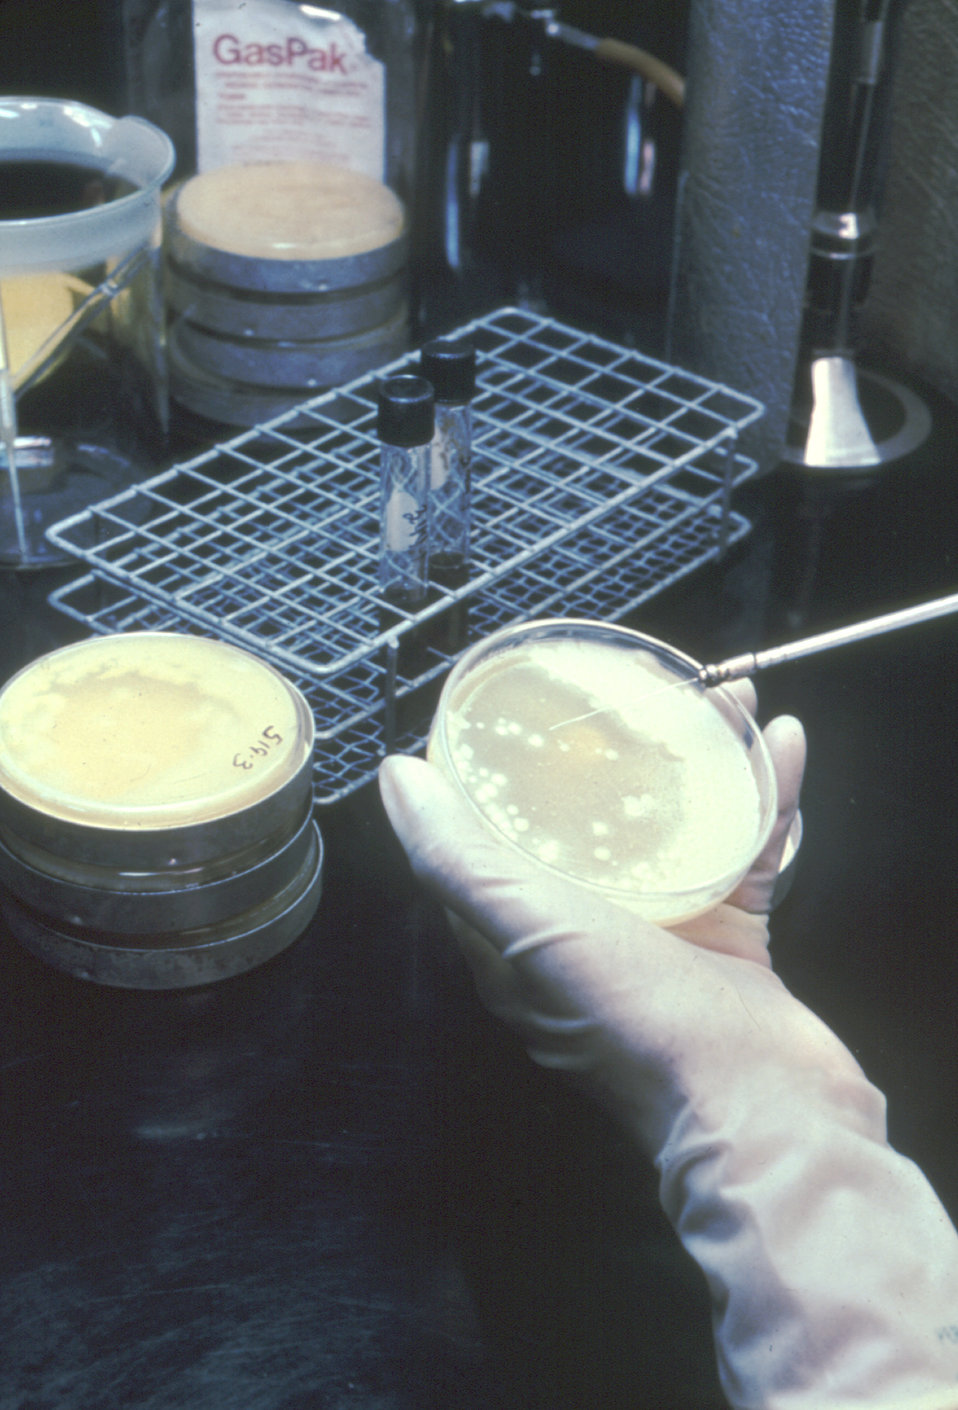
This laboratorian is checking egg yolk agar for lipase-positive growth of C. botulinum colonies.